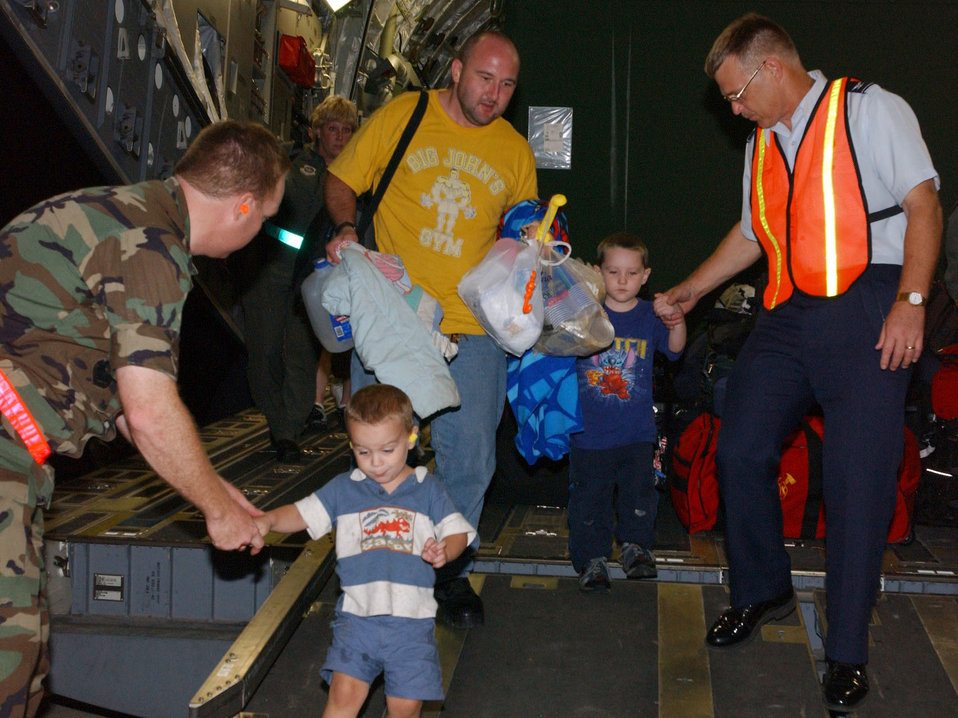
Hurricane Katrina medical evacuations

LACKLAND AIR FORCE BASE, Texas - Airmen and their families depart a C-17 Globemaster III after being evacuated from Keesler Air Force Base, Miss., in the wake of Hurricane Katrina here Aug. 30. The C-17 and aircrew are from the Mississippi Air National Guard.